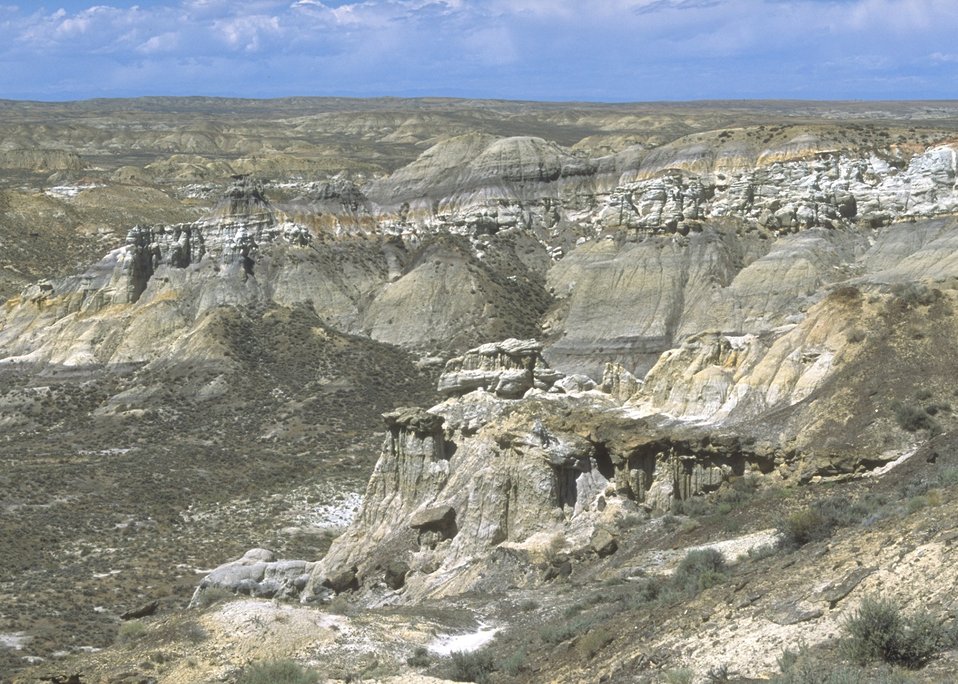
View of Honeycomb WSA, Worland Field Office.